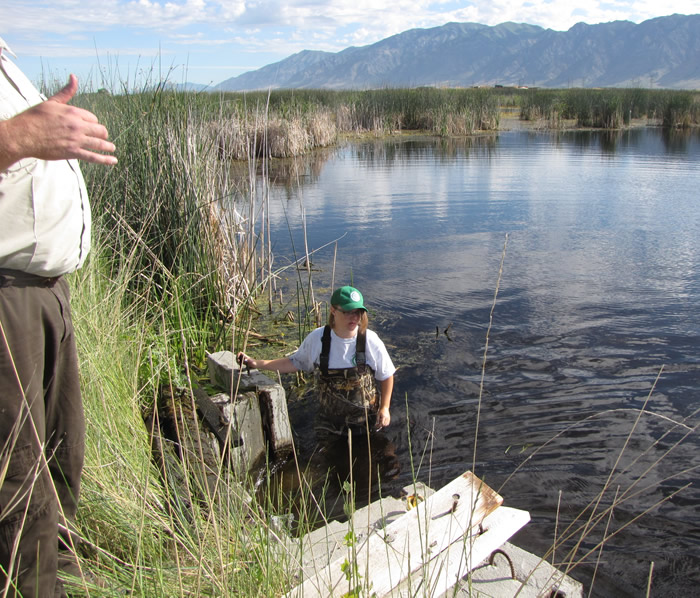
Water Management

Youth Conservation Corps crew cleaned and weeded around a water control structures to eliminate potential safety hazards related to weed growth. Approximately 40 structures were cleared.